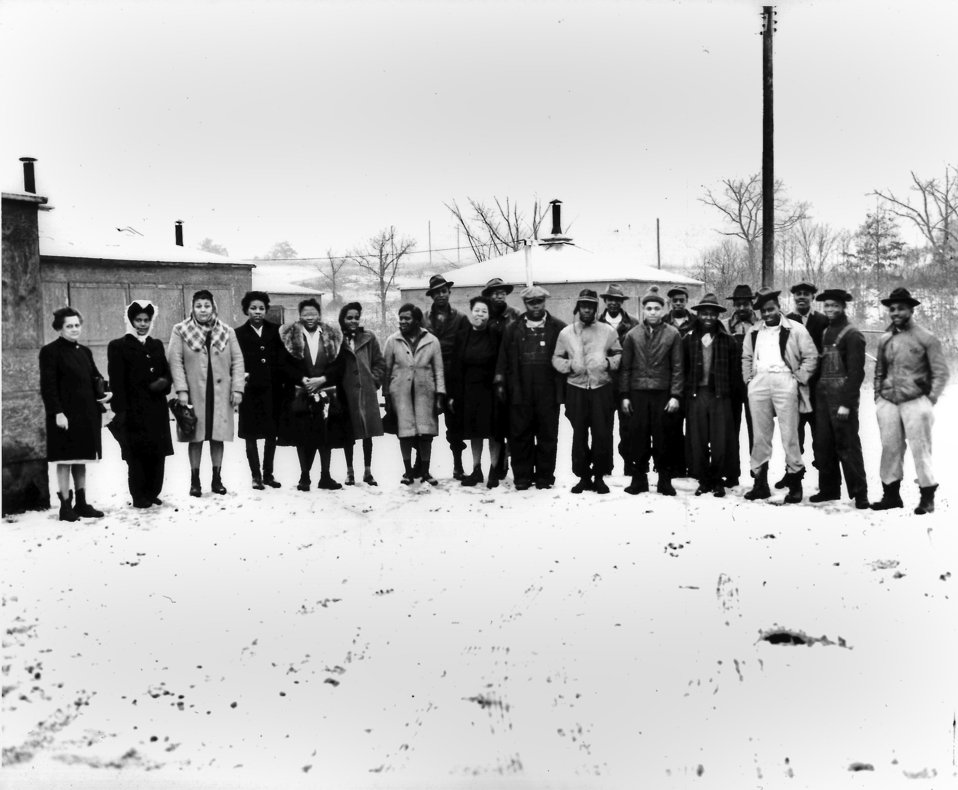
People living in Hutments Oak Ridge

1310-12 DOE photo by Ed Westcott Oak Ridge Tennessee